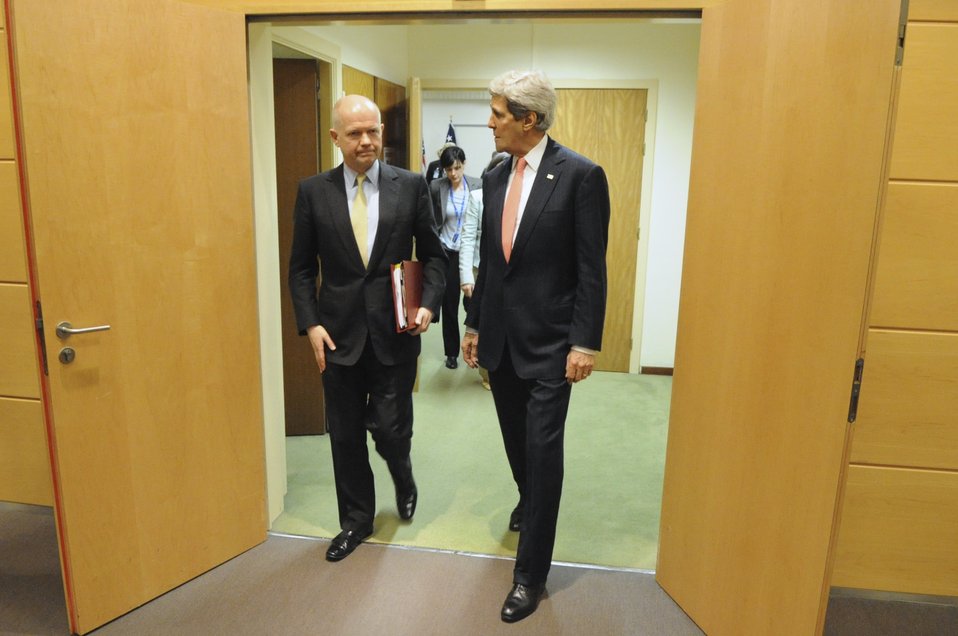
Secretary Kerry Meets With U.K. Foreign Secretary Hague in Brussels

U.S. Secretary of State John Kerry meets with U.K. Foreign Secretary William Hague on the sidelines of a NATO Ministerial Meeting in Brussels, Belgium, on April 2, 2014.